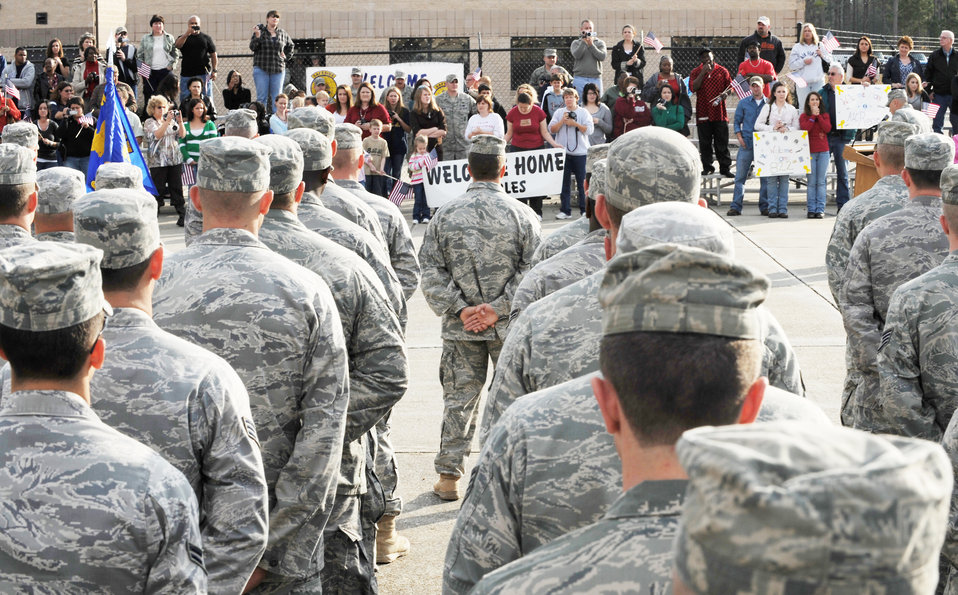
Moody Airmen return home

Members of the 822nd Security Forces Squadron stand in formation during a homecoming ceremony Dec. 8, 2009, at Moody Air Force Base, Ga. About 200 members were deployed for six months to Camp Bucca, Iraq.